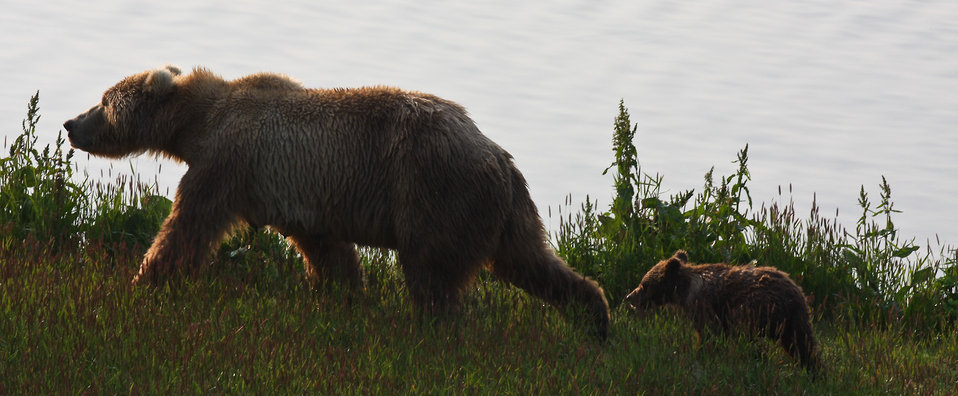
Sow and cub of the year at sunrise

Kodiak brown bears.
Lisa Hupp/USFWS